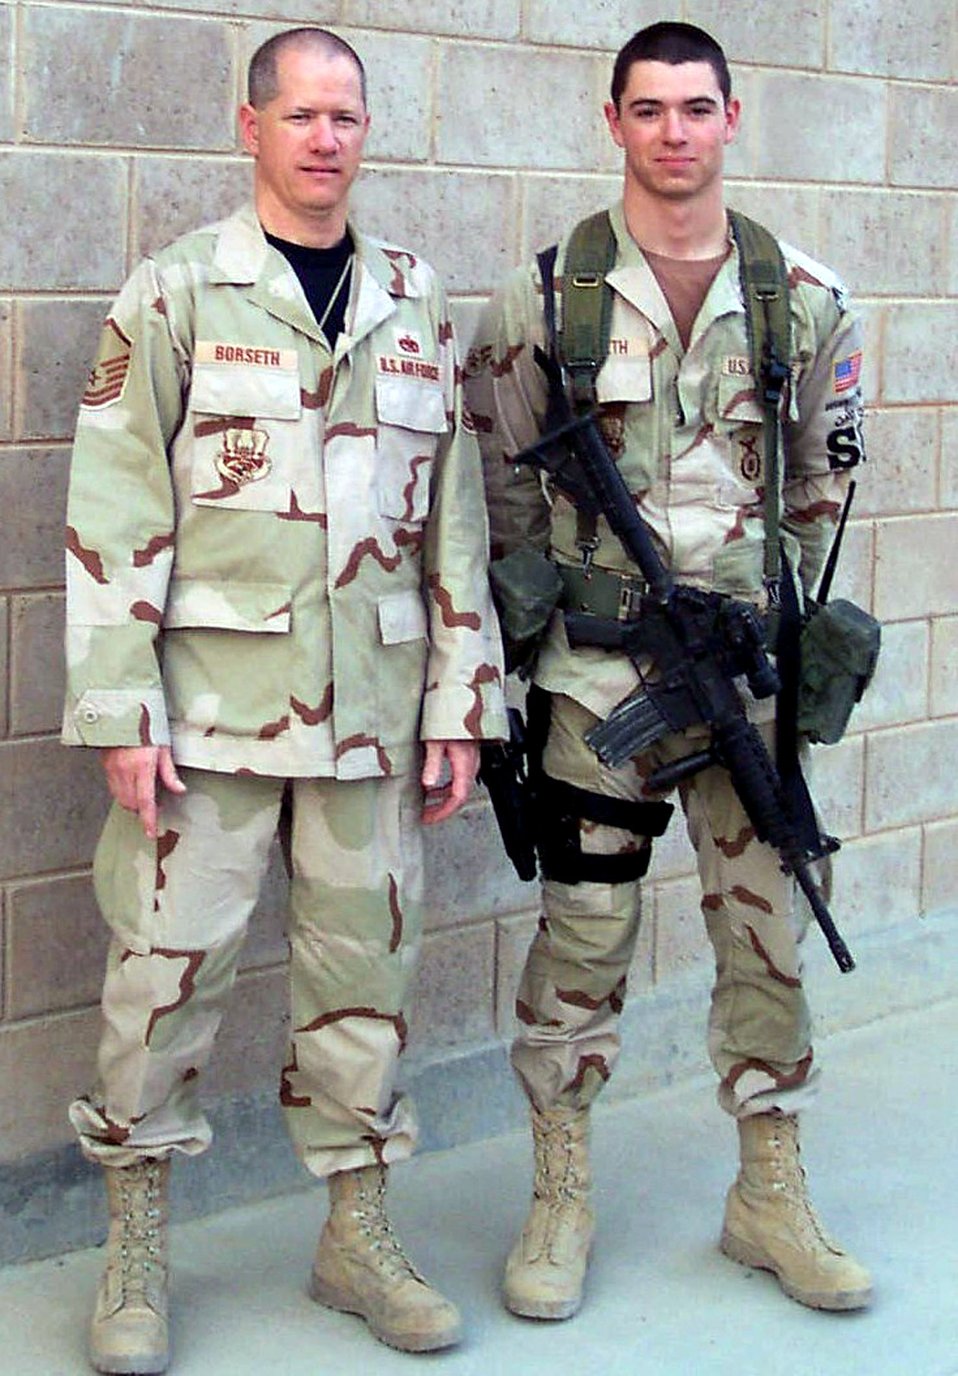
Father and son reunite in Southwest Asia

Master Sgt. Jon Borseth and his son, Airman 1st Class Jon Borseth II, pose for a photograph after reuniting in May 2007 in Southwest Asia. Both Sergeant and Airman Borseth deployed to the 386 Air Expeditionary Wing in air and space expeditionary force 7/8.